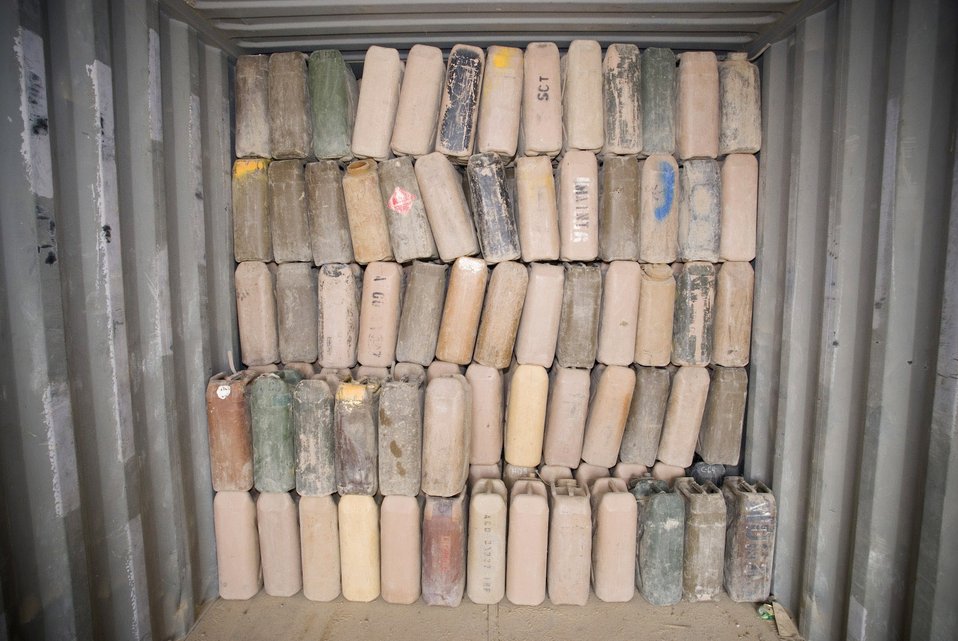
Mobile readiness team supports Army in Iraq

Water containers recovered by Material Recovery Team III with the 732nd Expeditionary Logistics Readiness Squadron are stacked inside a container express Oct. 19 at Camp Corregidor, Iraq. Serviceable assets recovered from the container express are inventoried and redistributed to Army units throughout Iraq. Airmen of various career fields volunteer to augment the Army in nontraditional